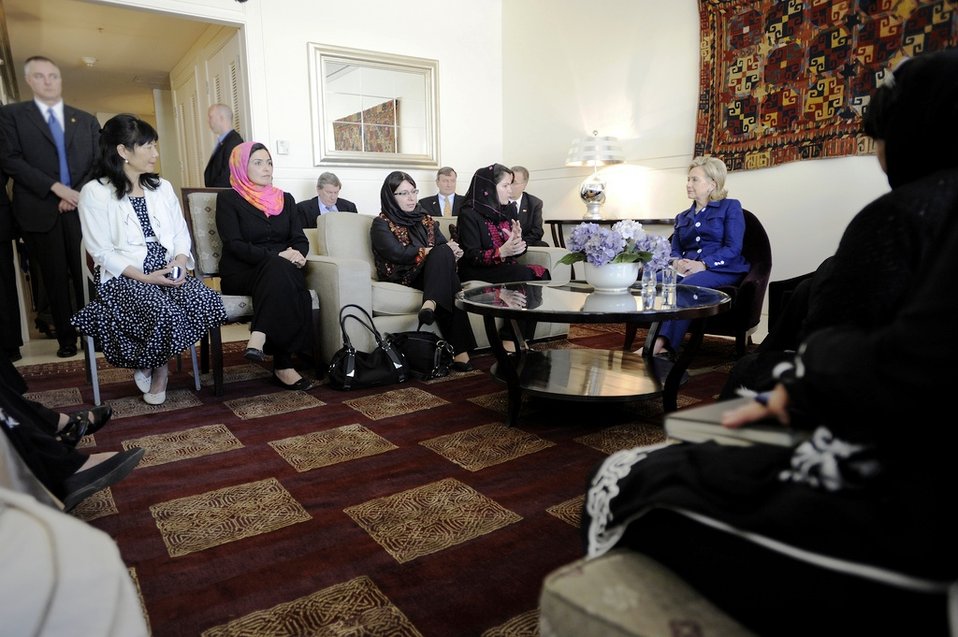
Secretary Clinton Participates in a Women’s Empowerment Event

U.S. Secretary of State Hillary Rodham Clinton participates in a women’s empowerment event hosted by EU High Representative for Foreign Policy Catherine Ashton in Kabul, Afghanistan, on July 20, 2010.